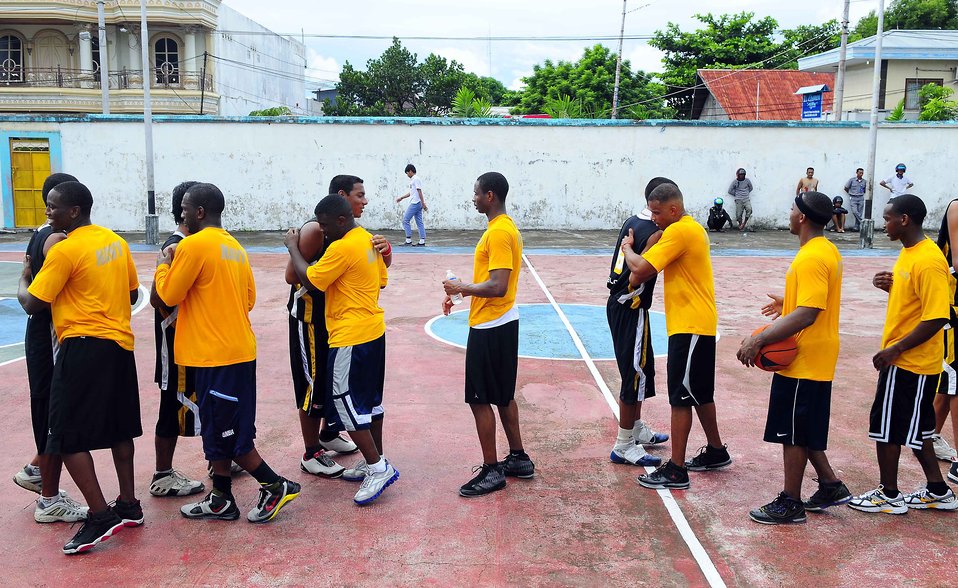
The Pangasila Ballers Team and Crewmembers Assigned to USNS Mercy Shake Hands

The Pangasila Ballers team and crewmembers assigned to the Military Sealift Command hospital ship USNS Mercy (T-AH 19) shake hands after a community service event in Ternate, Indonesia, on July 21, 2010. Pacific Partnership 2010 is the fifth in a series of annual U.S. Pacific Fleet endeavors conducted in Indonesia as a disaster relief exercise aimed at strengthening regional relationships with host and partner nations in Southeast Asia and Oceania.